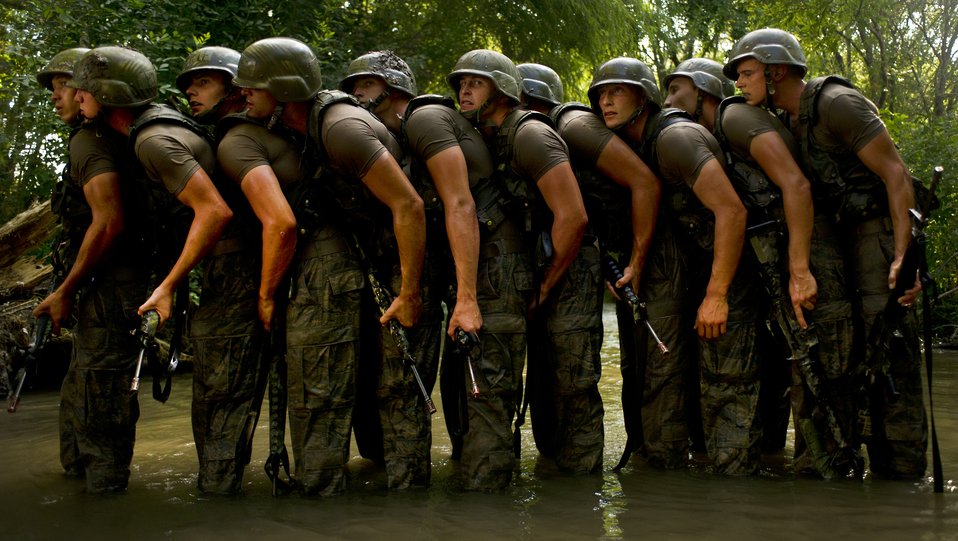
Hell Week

Airmen “stack up” in a pond during the Air Force Pararescuemen Indoctrination Course Sept. 6, 2011, at Lackland Air Force Base, Texas. During the course, also known as